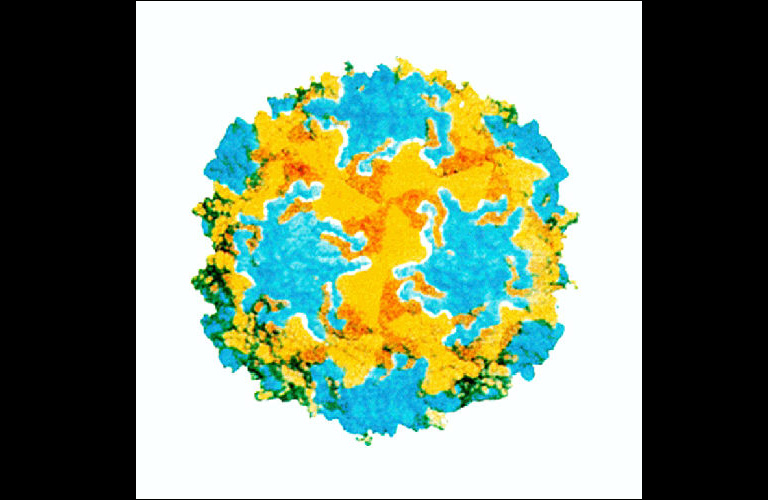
Illustration of polio virus.